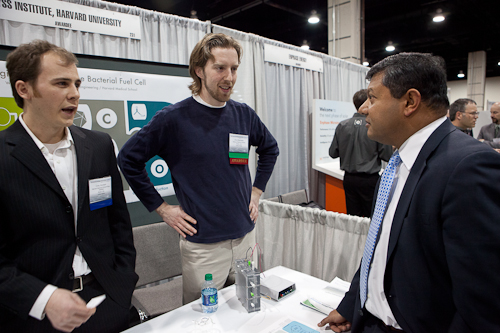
Harvard's Electrofuels

Researchers at Harvard University explain their technology to ARPA-E Director Arun Majumadar. Harvard is engineering a self-contained, scalable Electrofuels production system that can directly generate liquid fuels from bacteria, carbon dioxide (CO2), water, and sunlight.